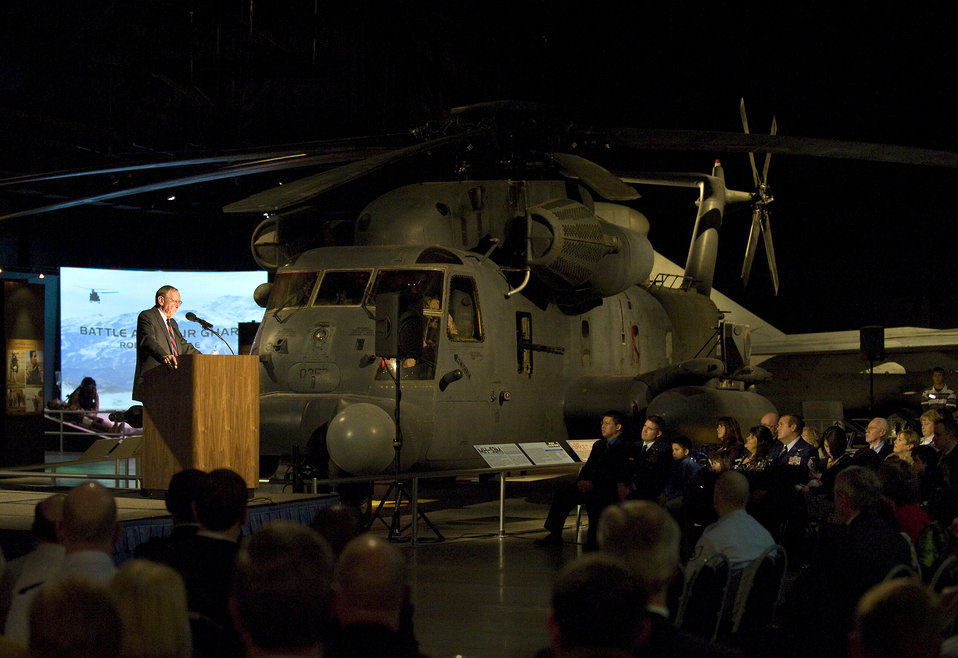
Museum opens exhibit dedicated to 'Warrior Airmen'

Retired Maj. Gen. Charles D. Metcalf officially opens the Warrior Airmen Exhibit Jan. 12 at the National Museum of the U.S. Air Force at Wright-Patterson Air Force Base, Ohio. General Metcalf is the director of the National Museum of the U.S. Air Force.